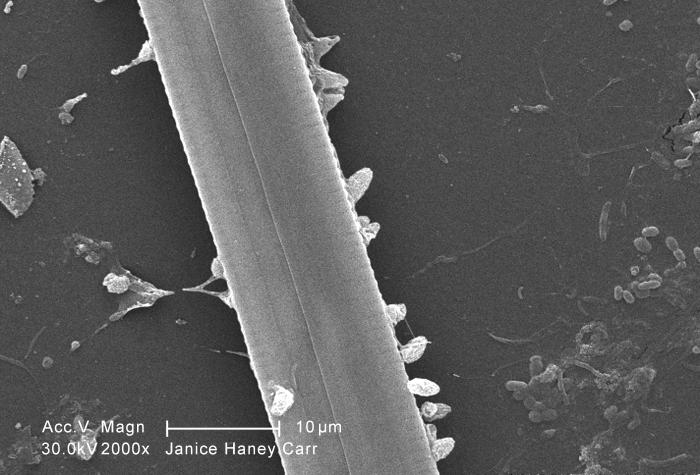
At a magnification of 2000X, this scanning electron micrograph (SEM) of an untreated water specimen extracted from a wild stream mainly used to control flooding during inclement weather, revealed the presence of unidentified organisms, which included bacteria, protozoa, and algae. Though unidentified, this view depicts a section of a suspected green algae, Ankistrodesmus. Note the bacteria inhabiting the biofilm coating in the bachground. See PHIL 11710 for a colorized version of this image.